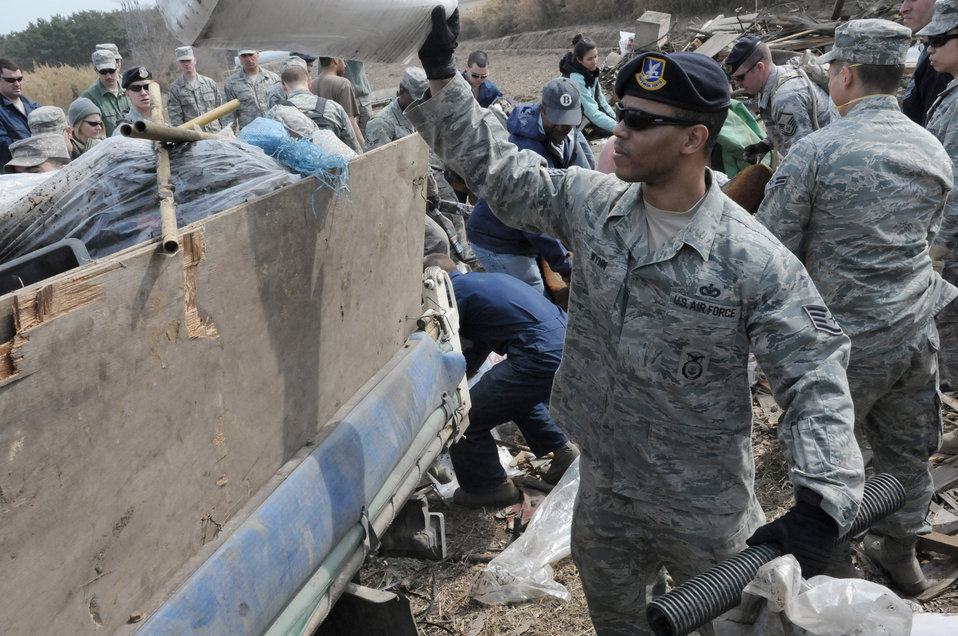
Misawa Airmen continue relief efforts

Staff Sgt. Curtis Wynn loads debris into the back of a flatbed truck April 7, 2011, during a humanitarian relief mission in Hachinohe, Japan. Sergeant Wynn is assigned to the 35th Security Forces Squadron at Misawa Air Base, Japan.